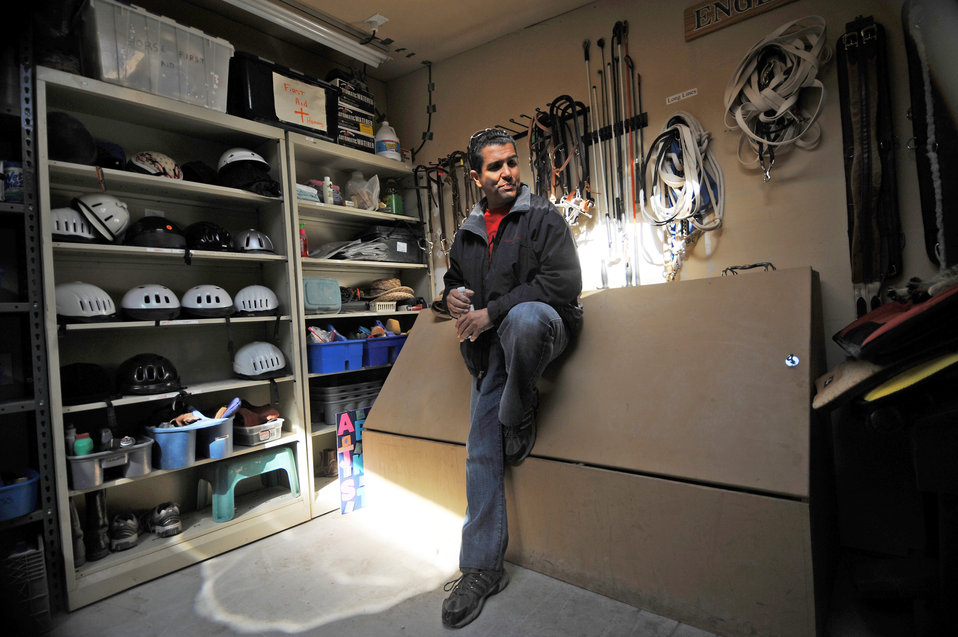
Horses Healing Heroes

Tony Jones, a retired Air Force major and former navigator on an MC-130 Combat Talon gunship, relaxes at the Spirit Therapies equestrian center in Las Vegas, Nev. Major Jones, who was injured in Iraq as a result of a rocket attack, has been participating in the Horses Healing Heroes program for seven months and has noticed dramatic improvement in his ability to deal with stress and severe migraines.